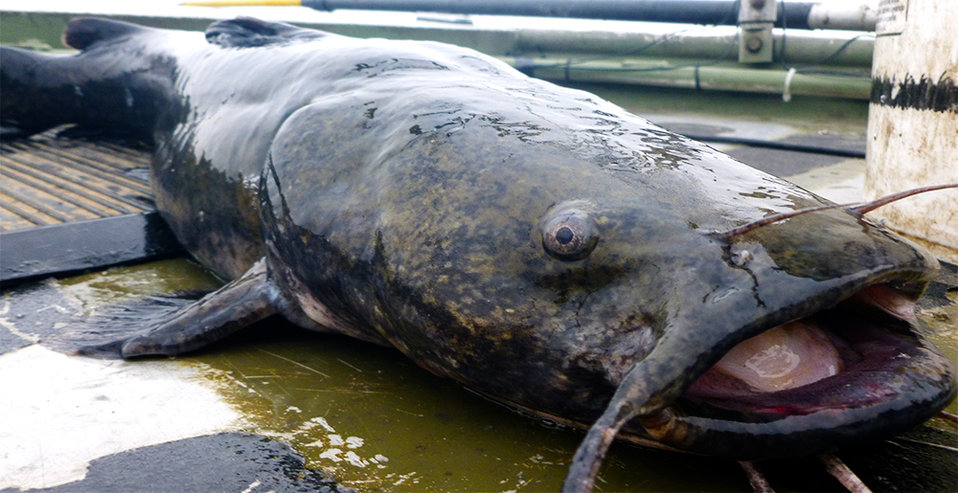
Flathead Catfish